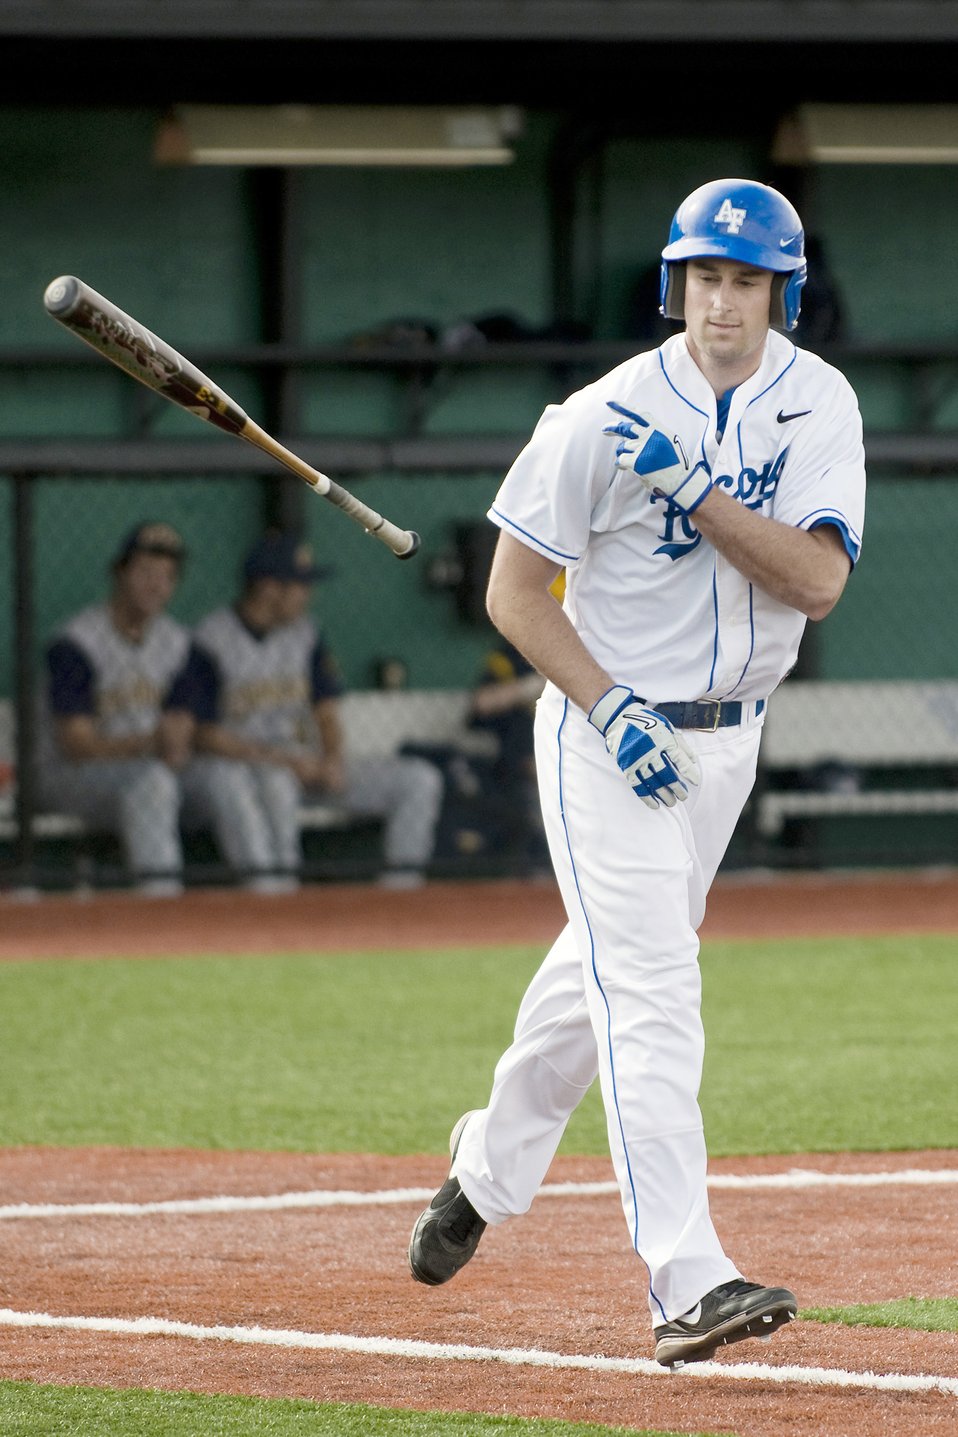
Falcons defeat the Cougars

Falcon senior first baseman Addison Gentry tosses the bat after hitting a homerun and one of his four RBIs during the Falcons March 30, 2010 contest against Colorado Christian University held at the U.S. Air Force Academy's Falcon Field in Colorado. The Falcons defeated the Cougars 25-7.